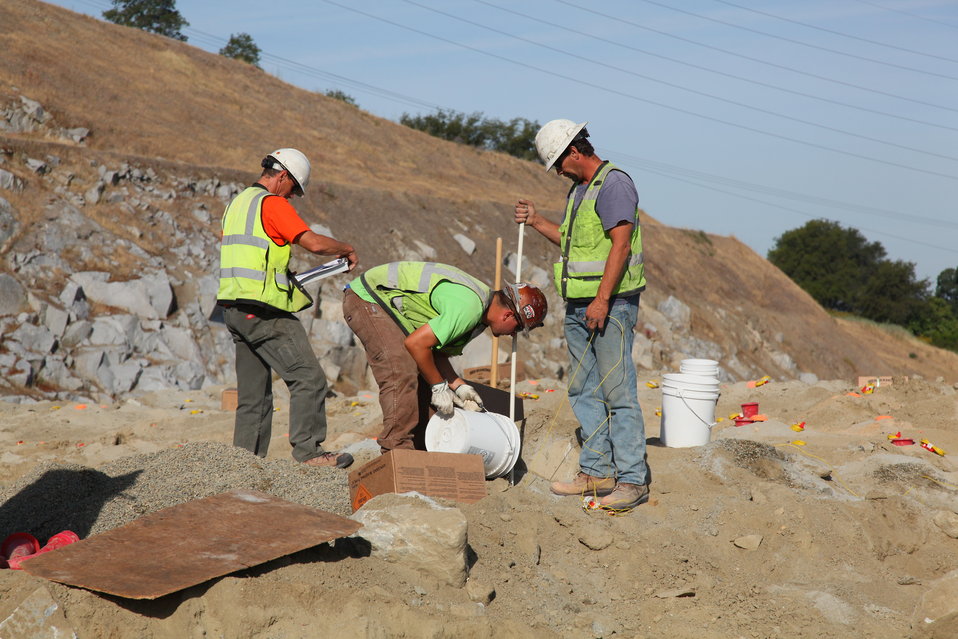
Preparing to blast at Folsom Dam

The blaster in charge oversees the setting of charges for ongoing excavation of the Folsom Dam auxiliary spillway June 16, 2011 in Folsom, Calif. “Daily blasting can be up to 150 single blasts,” said Larry Smith, area engineer for the U.S. Army Corps of Engineers Sacramento District. The blasting will continue until December.